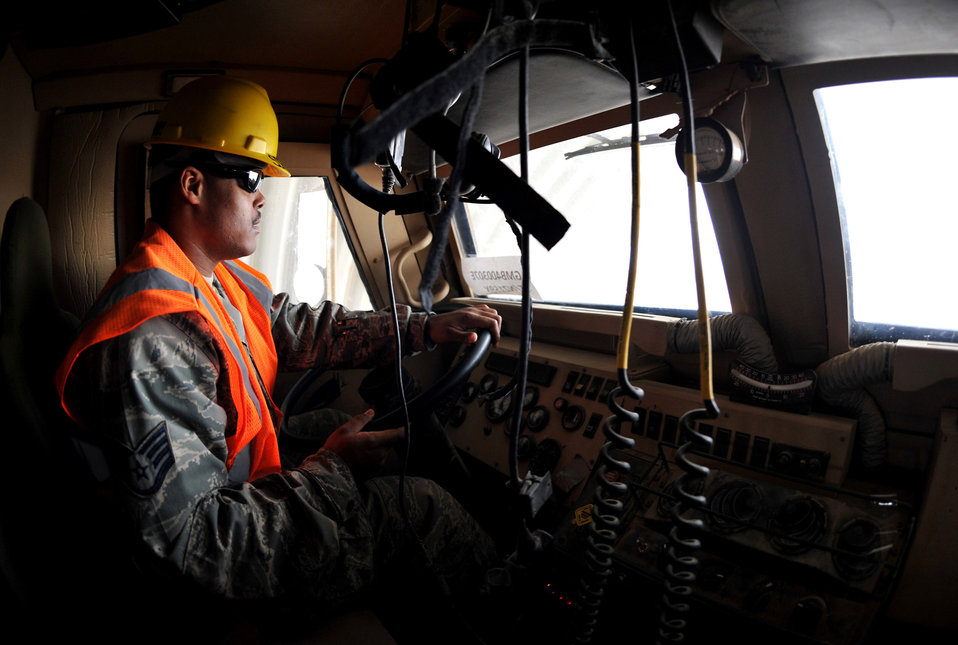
RPAT Airmen

Staff Sgt. Craig Harris drives a mine-resistant ambush-protected vehicle through the redistribution property assistance team yard, Jan. 29, 2011, on Contingency Operation Base Speicher, Iraq. Sergeant Harris is the rolling stock NCO in charge for COB Speicher's redistribution property assistance team.